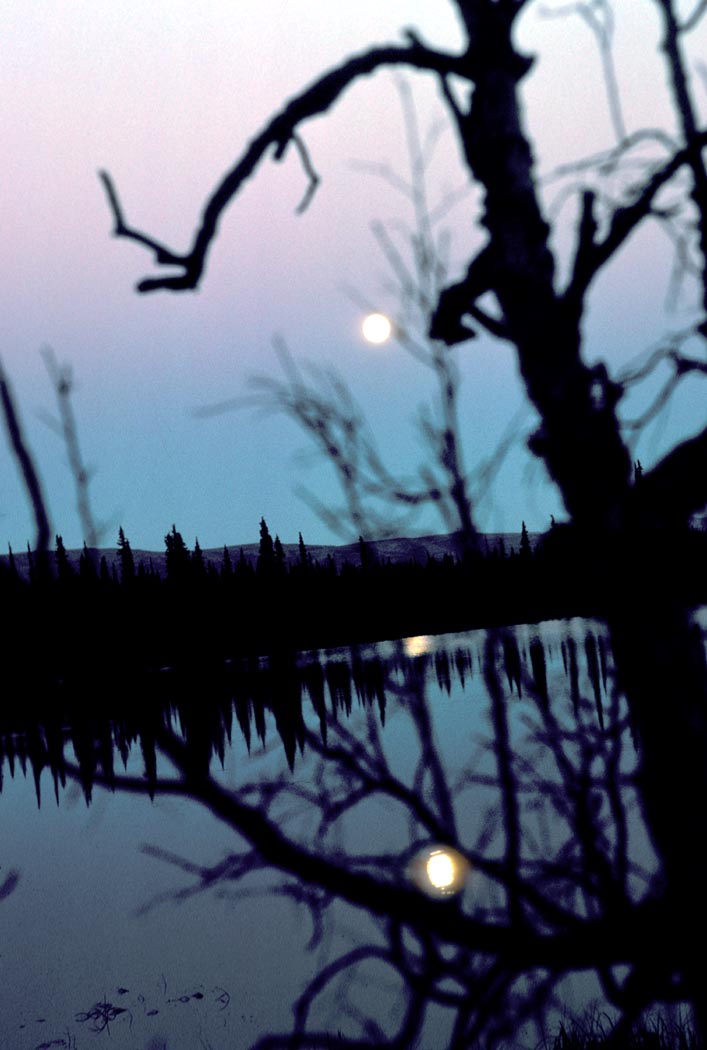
moon on lake

Selawik National Wildlife Refuge, AK